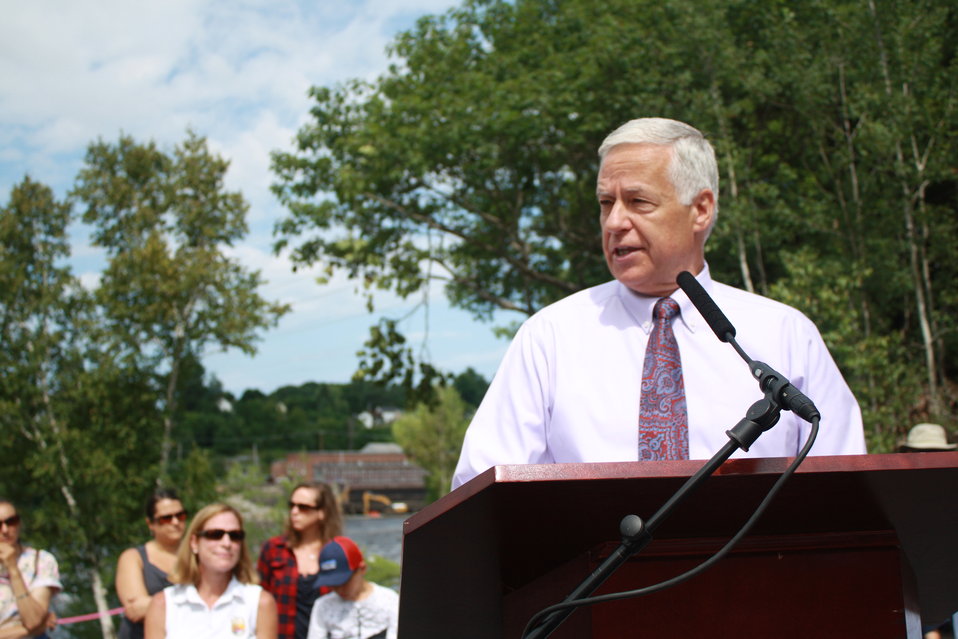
Veazie Dam Removal

U.S. Congressman Mike Michaud.